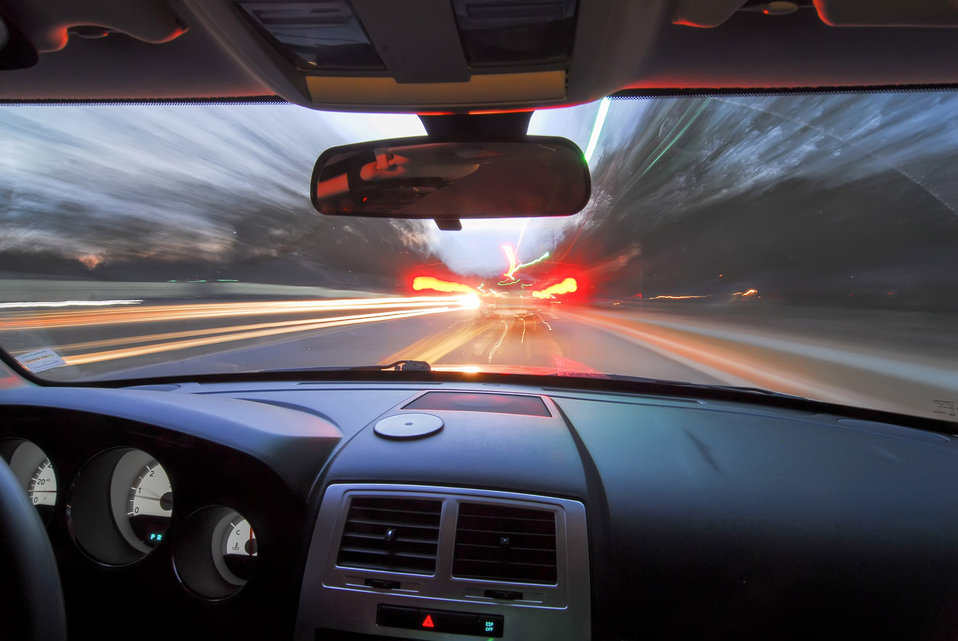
Traveling at speed of light.